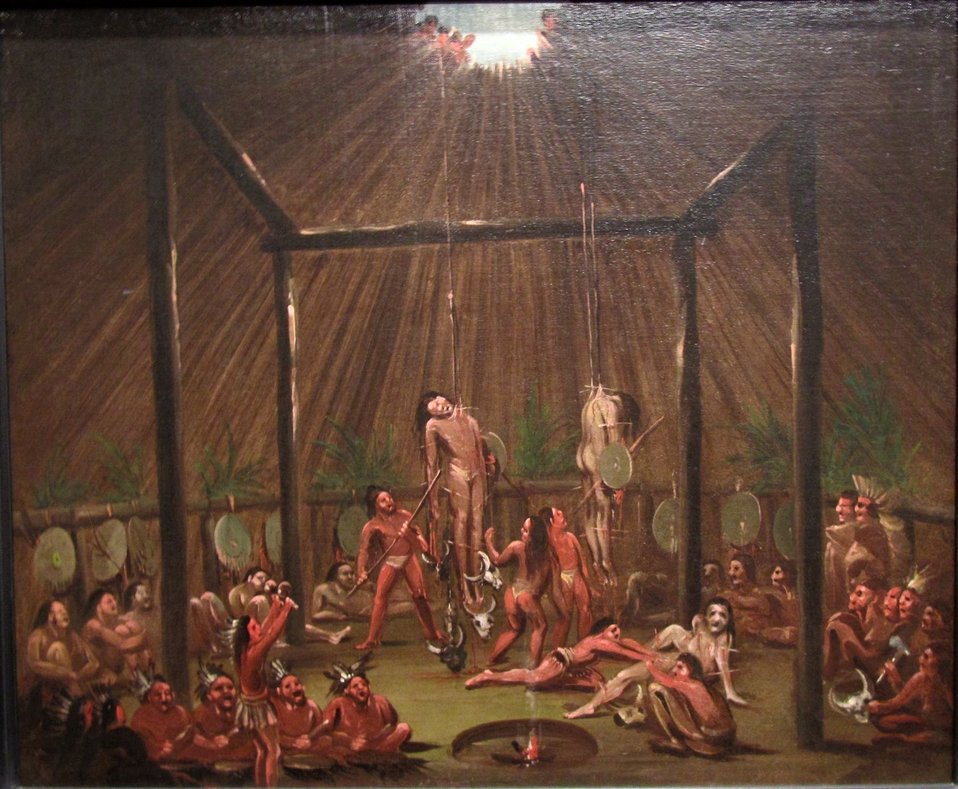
'The Cutting Scene, Mandan-O-kee-pa Ceremony', oil on canvas painting by George Catlin, 1832